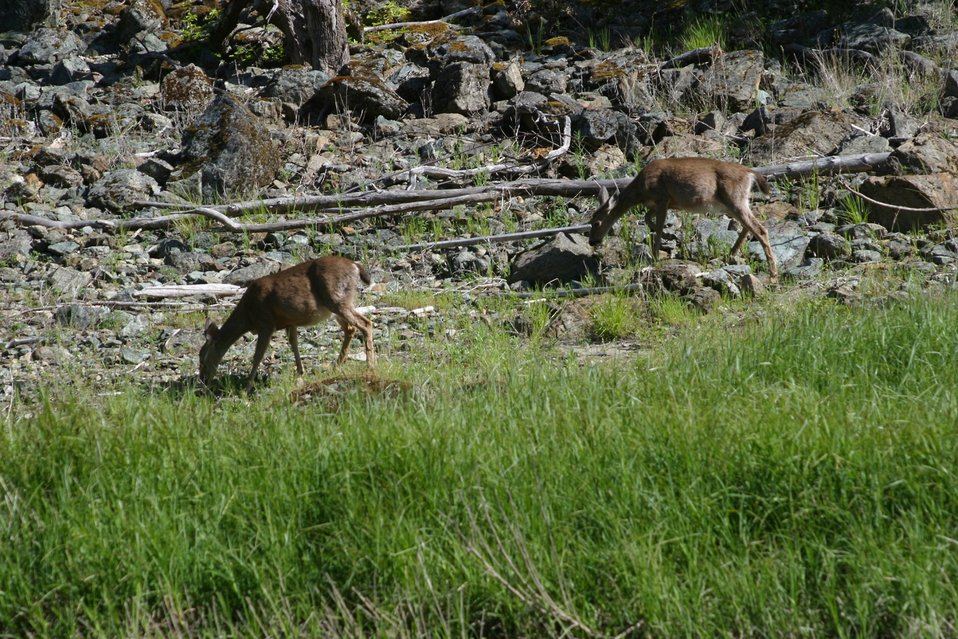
Wild section of the Rogue River from Grave Creek to Foster Bar May 19 to May 22.